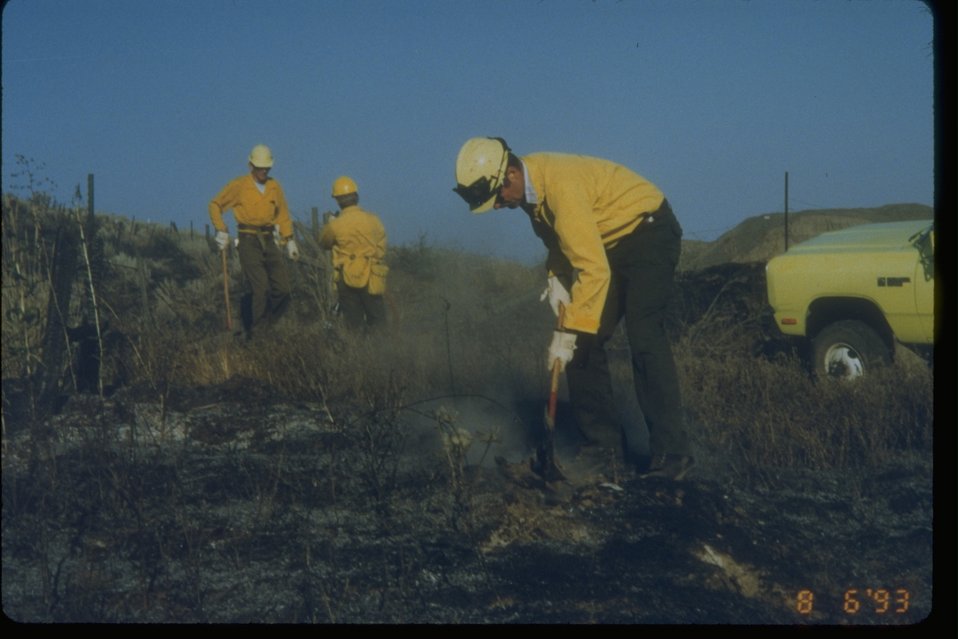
BLM crew supresses fire in Lincoln County, Washington.